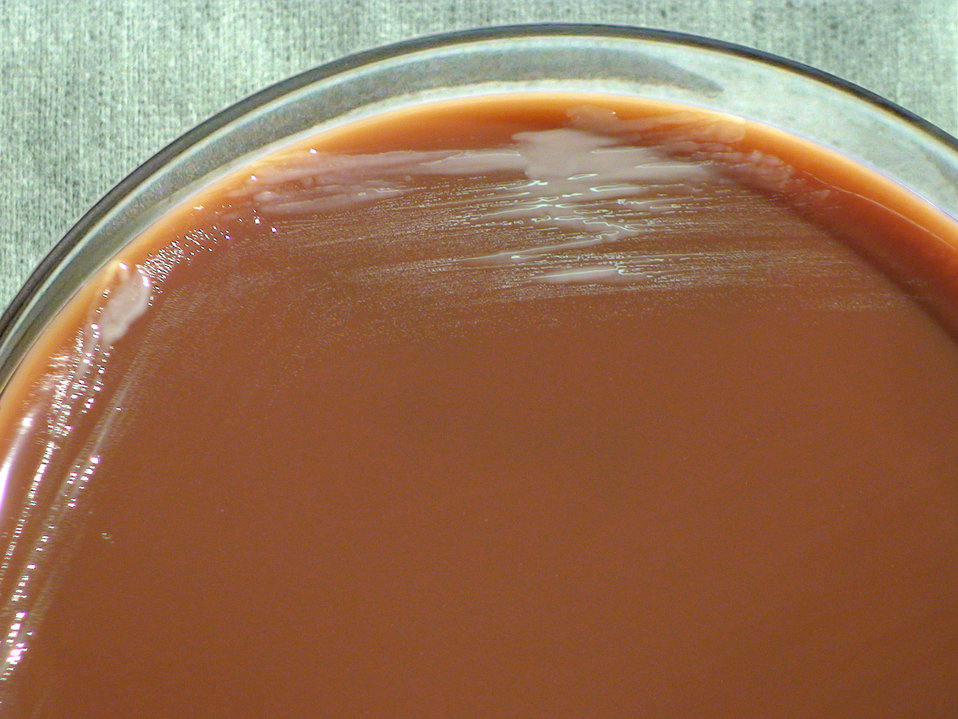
As a closer view of PHIL 12478, this photograph depicts the colonial morphology displayed by Gram-negative Brucella suis bacteria, which was grown on a medium of chocolate agar, for a 72 hour time period, at a temperature of 37�C. See PHIL 12475, for a view of these bacteria grown on the same medium and temperature, but for only one-third the time period (24hr). Also note PHIL 12476 and 12477, again depicting B. suis organisms, which were grown on both the same medium and temperature, but for only two-thirds time period (48hr). Brucella spp. bacteria are pathogenic towards humans, and cause a disease known as brucellosis.